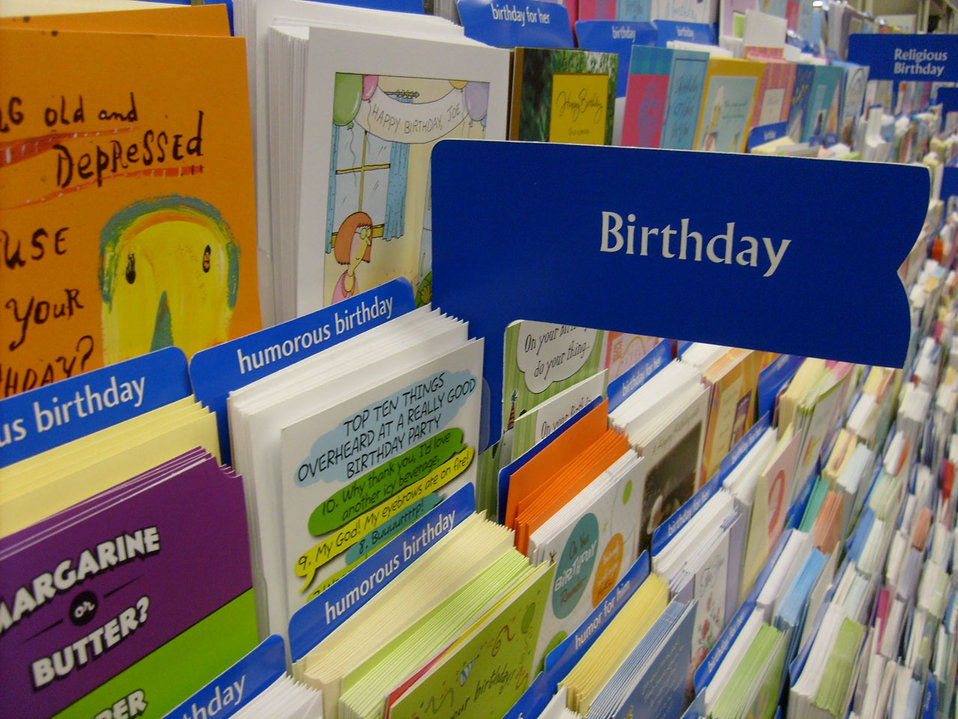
Birthday cards

Birthday card display.